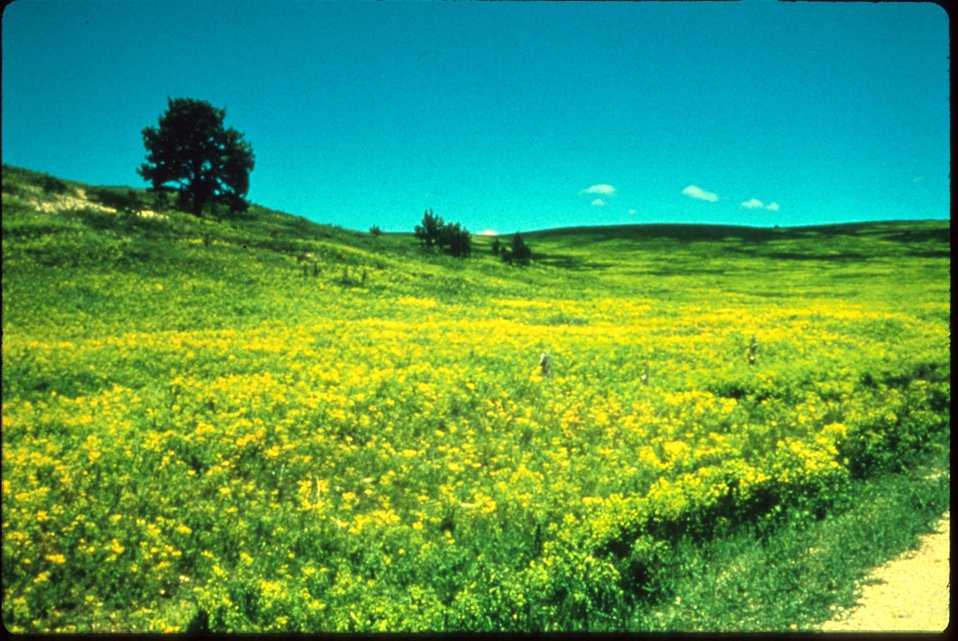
Leafy Spurge Idaho vegetation Plants in BLM